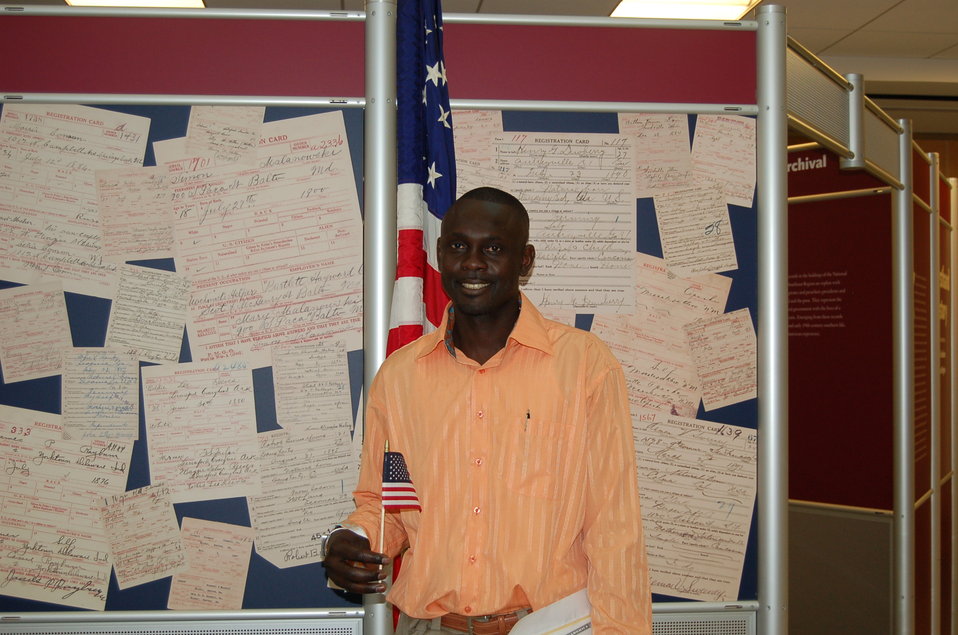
New Citizens